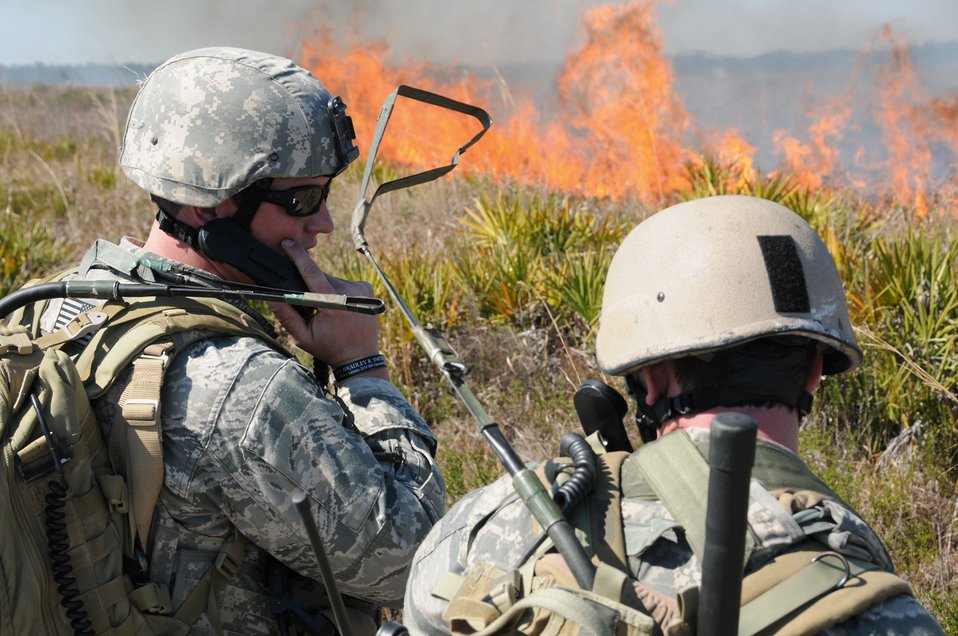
Atlantic Strike

Staff Sgt. Cody McNorton and Senior Airman Joseph Flynn call in information during exercise Atlantic Strike Feb. 15, 2011, at Avon Park Air Force Range, Fla. Atlantic Strike is a coalition air-to-ground training exercise that simulates a deployed environment. Sergeant McNorton and Airman Flynn are members of the 14th Air Support Operations Squadron.